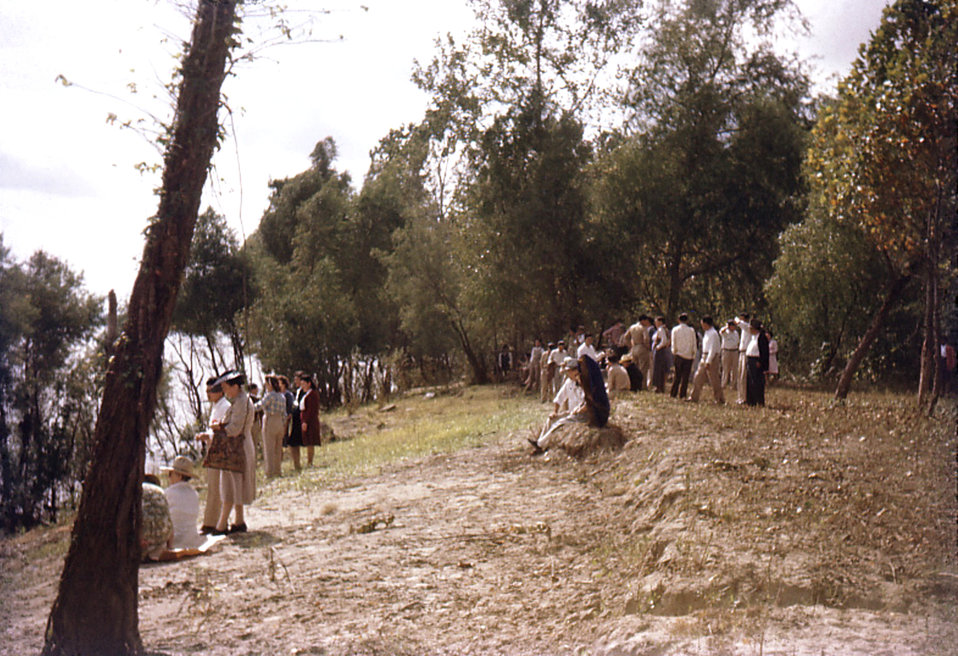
This historic image depicted a group of Carville Louisiana Leprosarium patients standing on a levee of the Mississippi, as they were watching a submarine pass by down river. Given the isolated environment in which the leprosarium's patients lived, a sight such as a passing submarine drew a good-sized crowd of both patients and staff members."Patients of the U.S. Marine Hospital in Carville, Louisiana, produced a set of 35 mm slides around 1950 from which this image was derived. In 2002, a patient's son donated the set, the only one known in existence, to the museum. The father, a patient at Carville for several years, brought these slides home around 1950 to give his family a snapshot of life at the national leprosarium. The act of quarantining patients for leprosy (HD) remained law in the state of Louisiana until 1957."